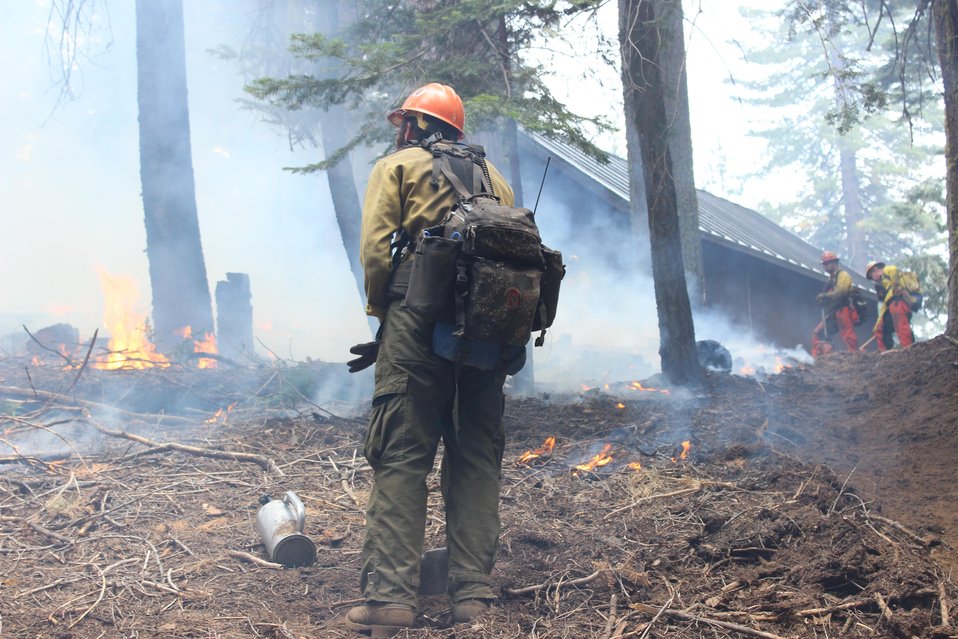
Hotshot crew holds the line to protect the Crane Flat Ranger Station at the Rim Fire. The Rim Fire in the Stanislaus National Forest near in California began on Aug. 17, 2013 and is under investigation. The fire has consumed approximately 235,841 acres and is 70% contained.